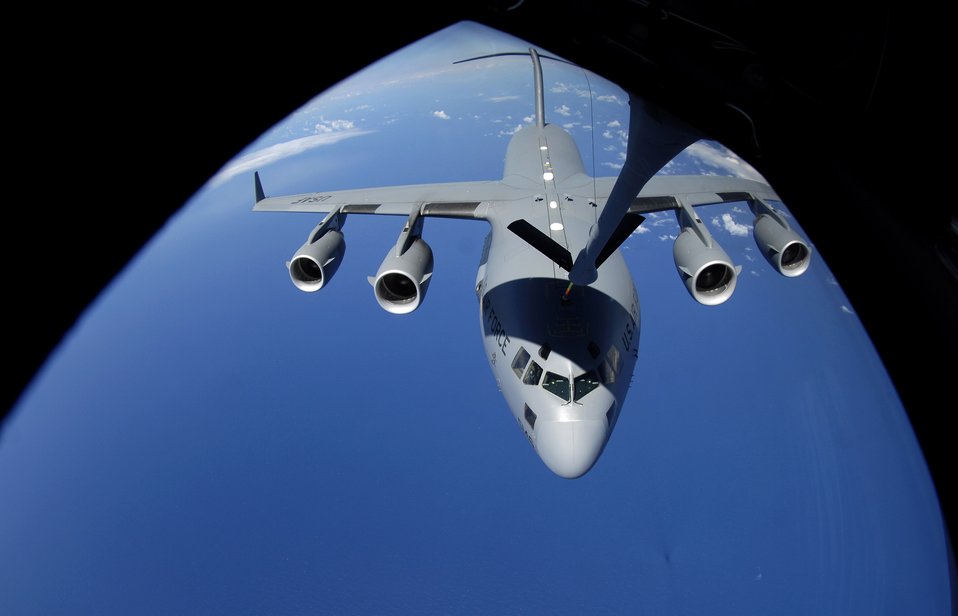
KC-135, C-17 crews rendezvous for refuel readiness

A C-17 Globemaster III receives fuel from a KC-135 Stratotanker June 18 during aerial refueling. The 909th Air Refueling Squadron came from Kadena Air Base, Japan to Hickam Air Force Base, Hawaii, to practice refueling with the 535th Airlift Squadron for the Air Mobility Command Rodeo.